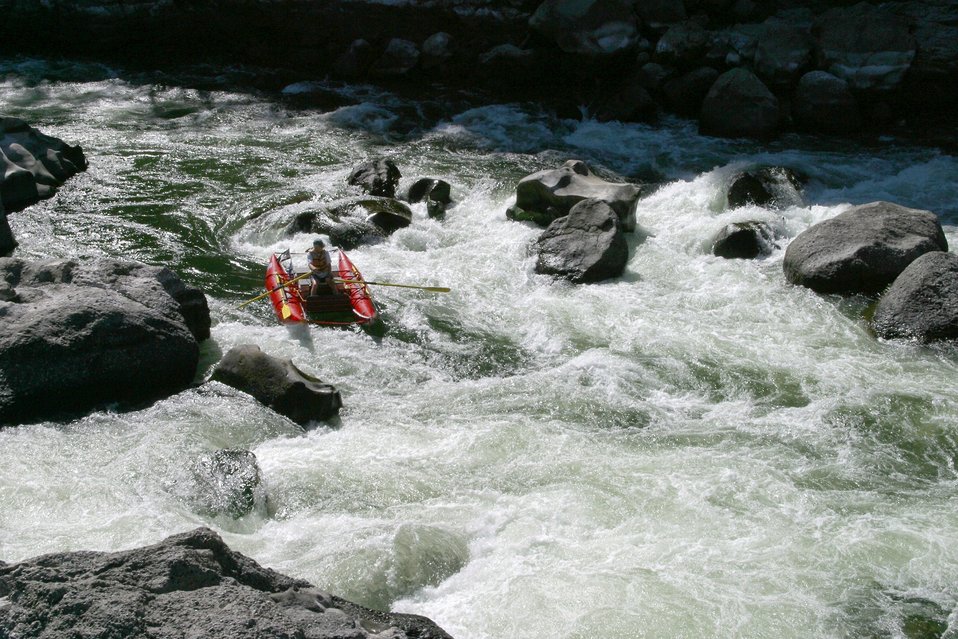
Blossom Rapids.